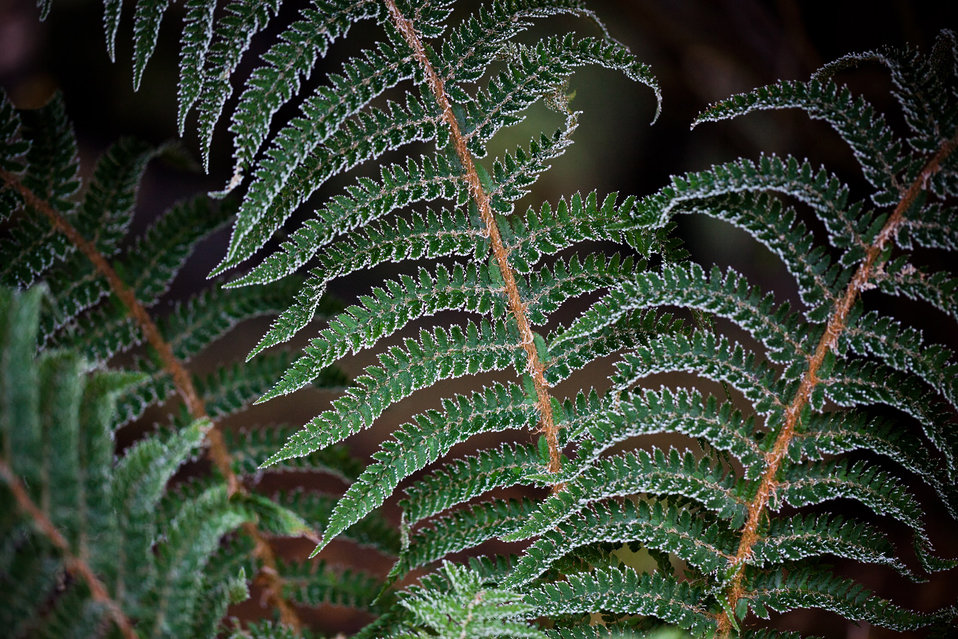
Frosty fern in one cold morning.